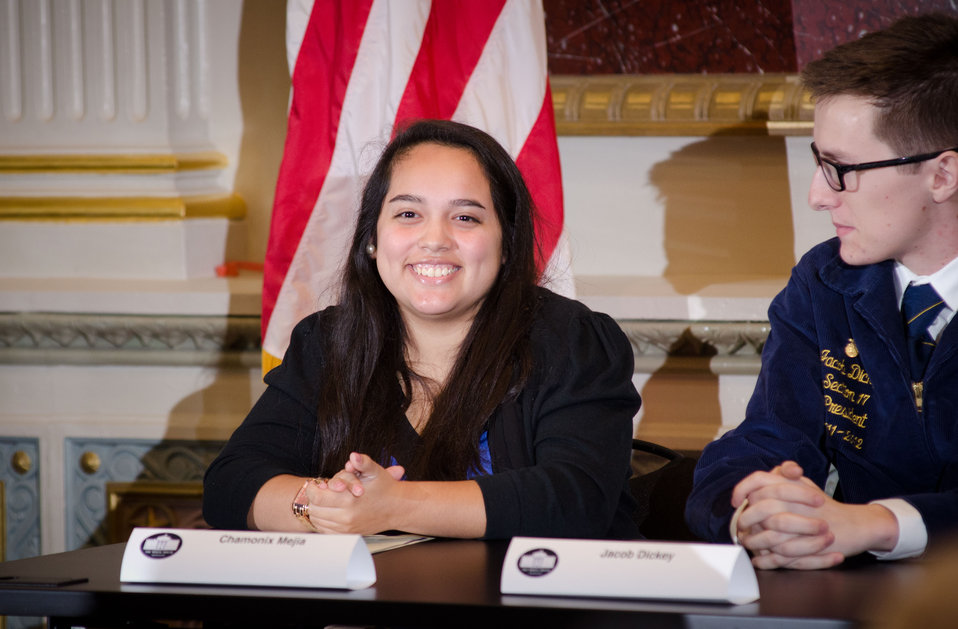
4-H member and Youth Champions of Change panelist Chamonix Mejia speaks during the Champions of Change Recognition event in the Indian Treaty Room of the Executive Office Building in Washington, D.C. on Tuesday, Oct. 9, 2012. The Champions of Change program was created to honor ordinary Americans doing great work in their communities. Each week, a different sector is highlighted and groups of Champions, ranging from educators, entrepreneurs and community leaders, are recognized for the work they are doing to serve and strengthen their communities.